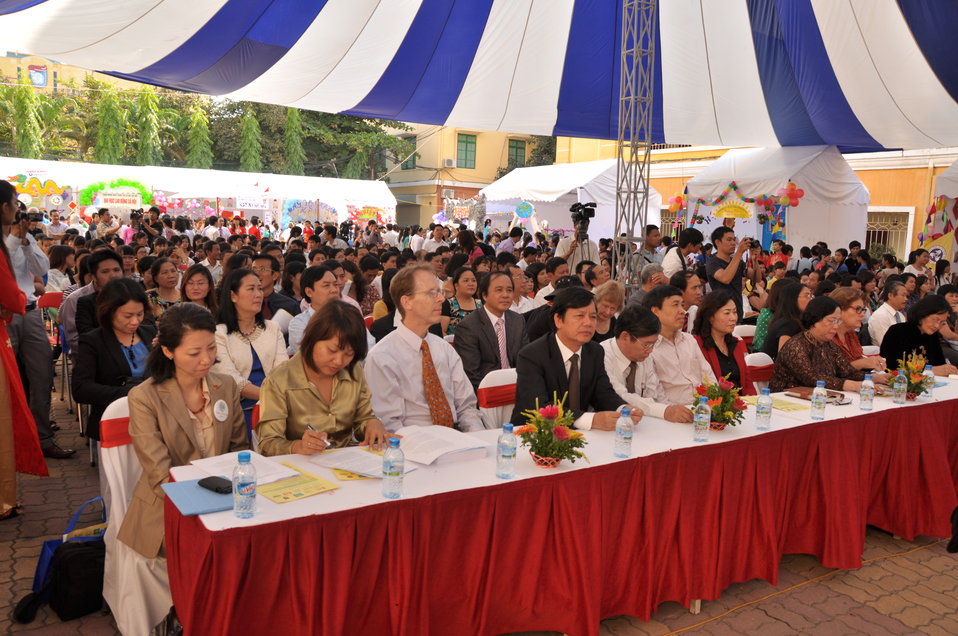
USAID Supports Social Work Education

Photo: @USAIDVietnam, November 9, 2012